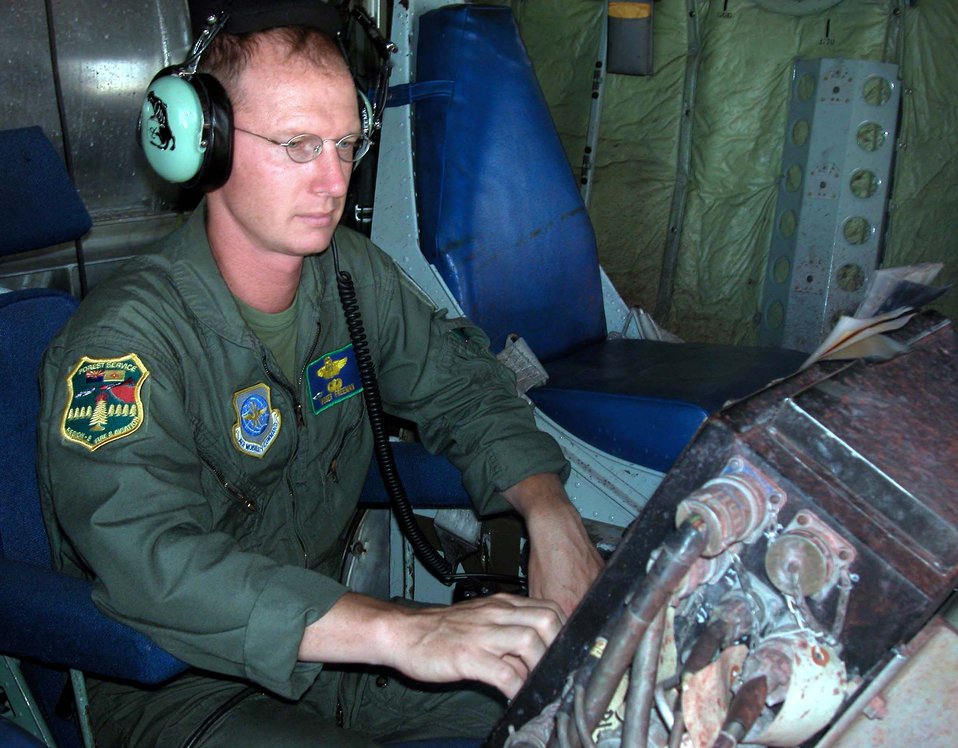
Firefighting

HILL AIR FORCE BASE, Utah (AFPN) -- Master Sgt. Tom Freeman checks gauges on a